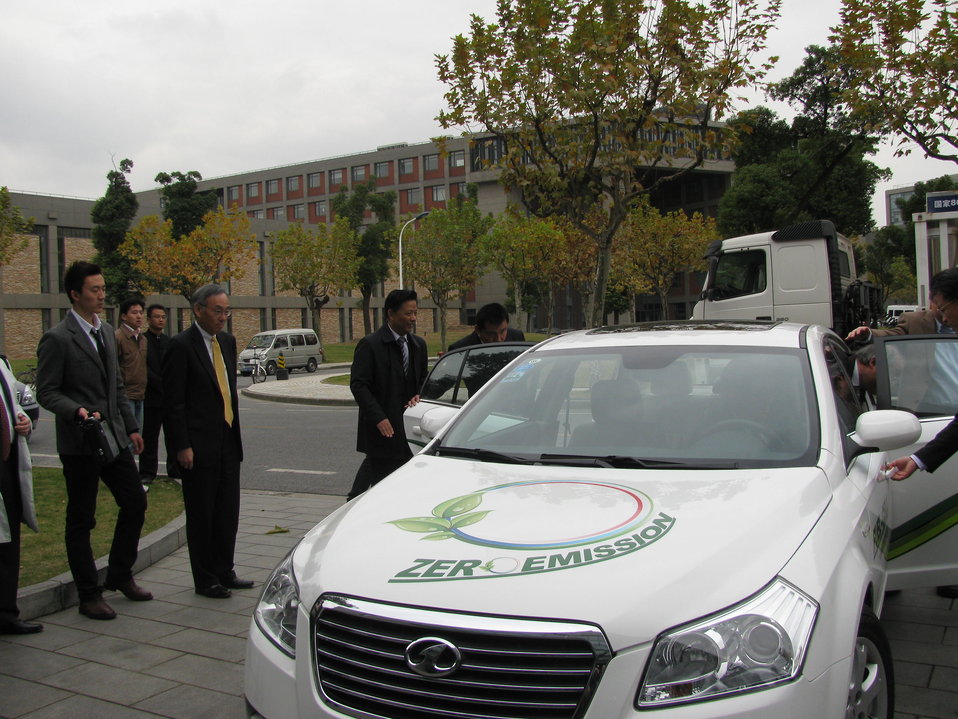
Shanghai 042